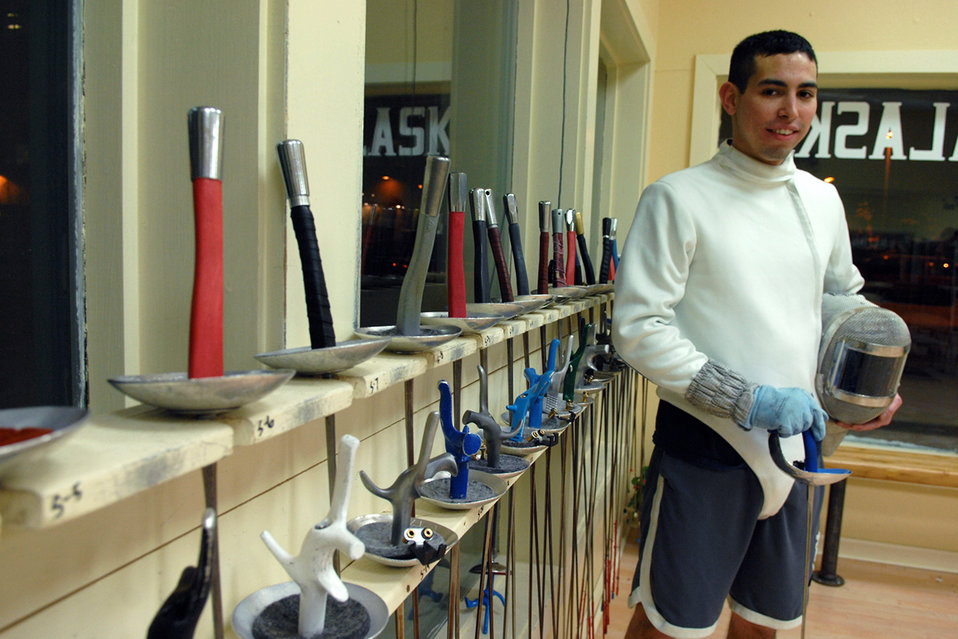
Arctic Warrior qualifies for national fencing tournament

Airman 1st Class Devin Zayas poses for a photo following fencing practice, Feb. 3, 2011, at the Fencing Center of Alaska in Anchorage, Alaska. Airman Zayas is a network integration technician with the 673rd Communications Squadron.